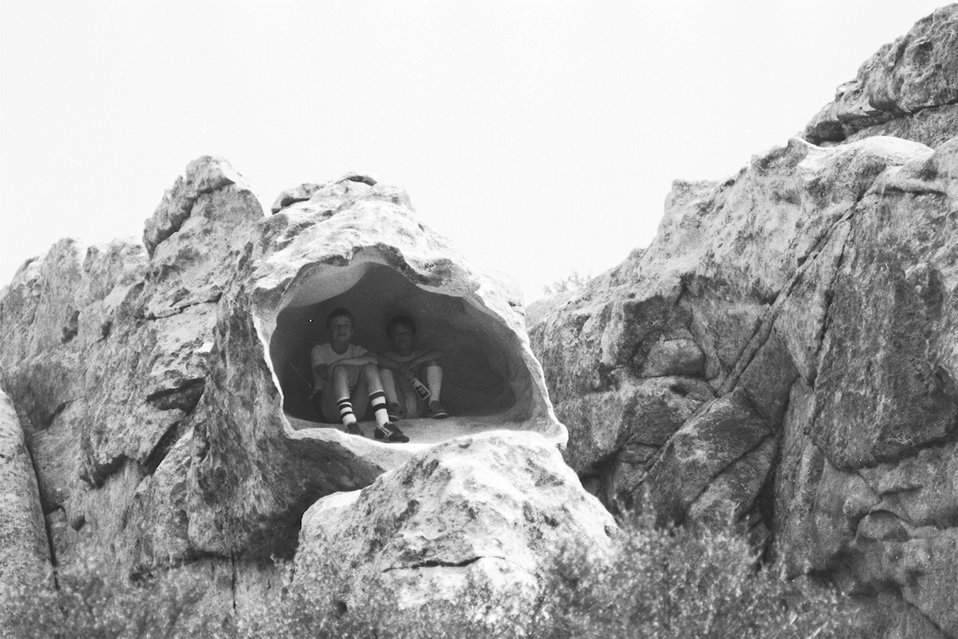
City of Rocks cave Burley Field Office USRD Upper Snake River District